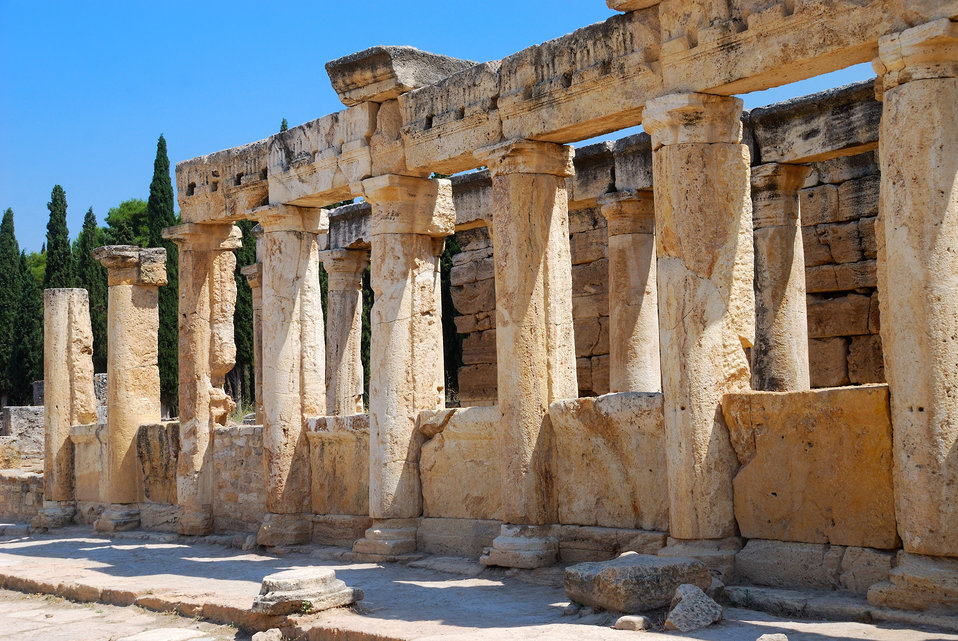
Ancient ruins

Ruins of greek city of hierapolis near pamukkale in turkey.